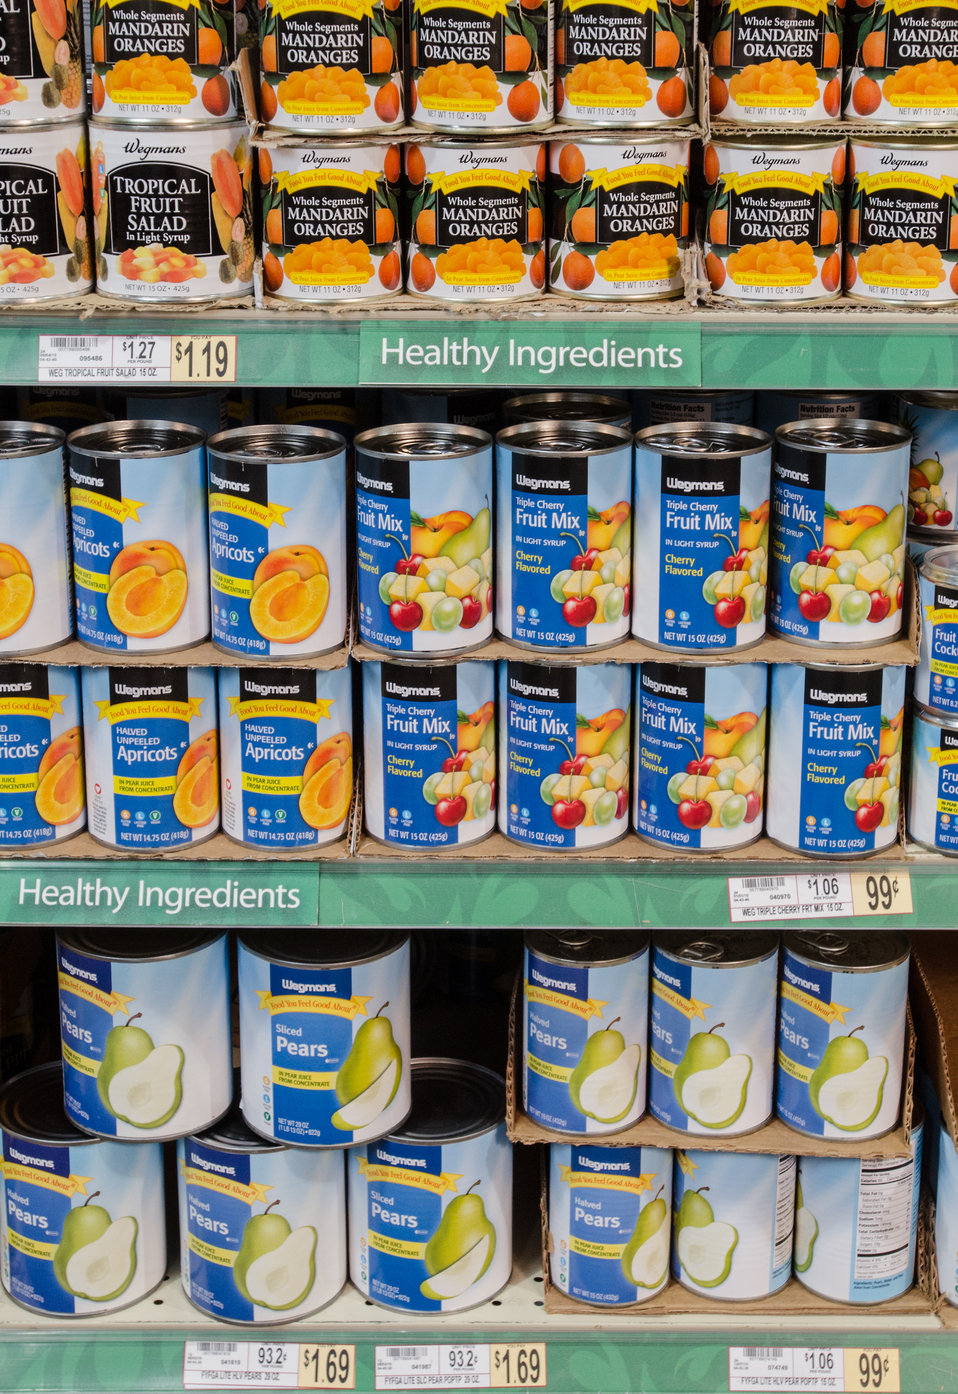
Canned goods at a grocery store in Fairfax, Virginia, on March 3, 2011.